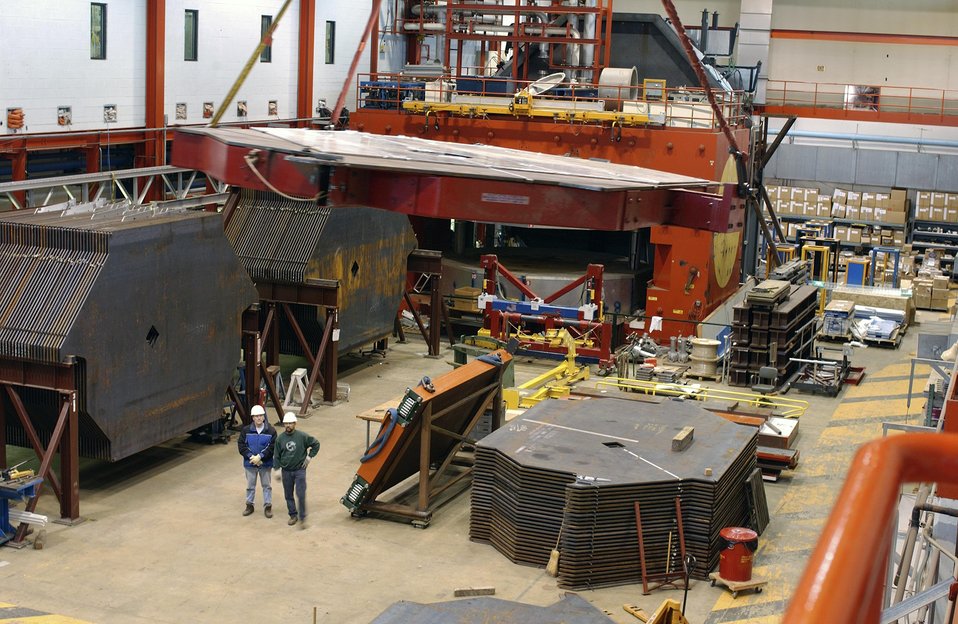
THE FIRST MINOS DETECTOR PLANE IN THE PROCESS OF BEING MOVED FROM THE NEW MUON LAB TO THE MINOS BUILDING.

TO CARRY OUT THE MINOS EXPERIMENT SCIENTISTS USE THE MAIN INJECTOR ACCELERATOR AT THE FERMI NATIONAL ACCELERATOR LABORATORY IN BATAVIA, ILLINOIS TO SEND A BEAM OF MUON NETURINOS THROUGH THE EARTH TO A CAVERN HALF A MILE UNDERGROUND IN A FORMER IRON MINE IN NORTHEASTERN MINNESOTA. PHYSICISTS WILL USE THE MINOS DETECTOR TO EXPLORE THE PHENOMENON OF NEUTRON MASS, A MILESTONE IN THE FIELD OF NEUTRINO PHYSICS.